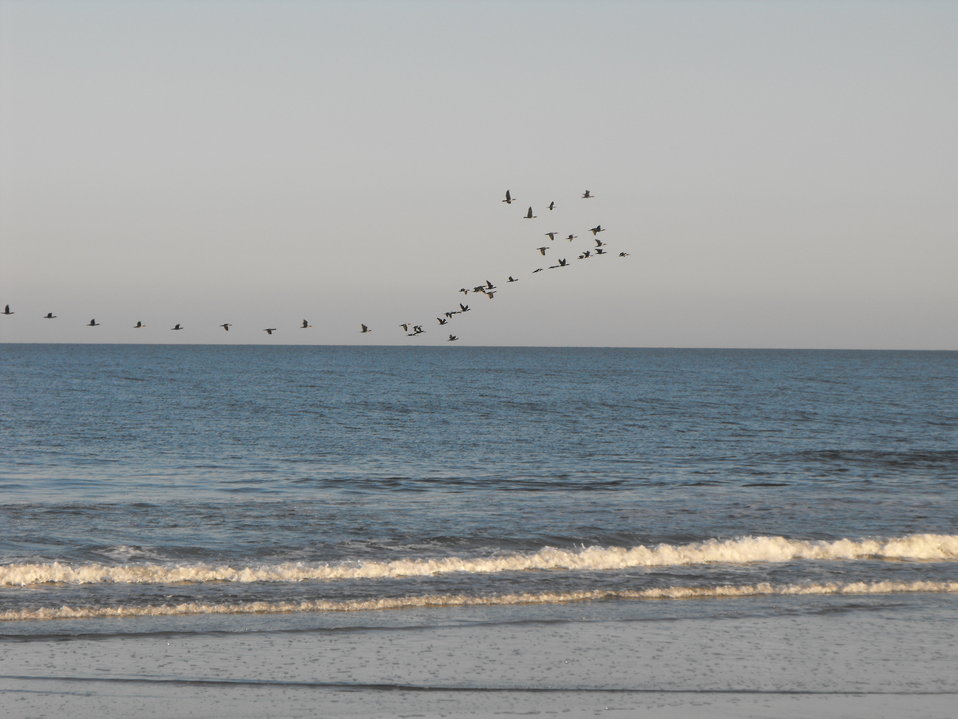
Migration over Wild Beach at Chincoteague National Wildlife Refuge / Assateague Island National Seashore.